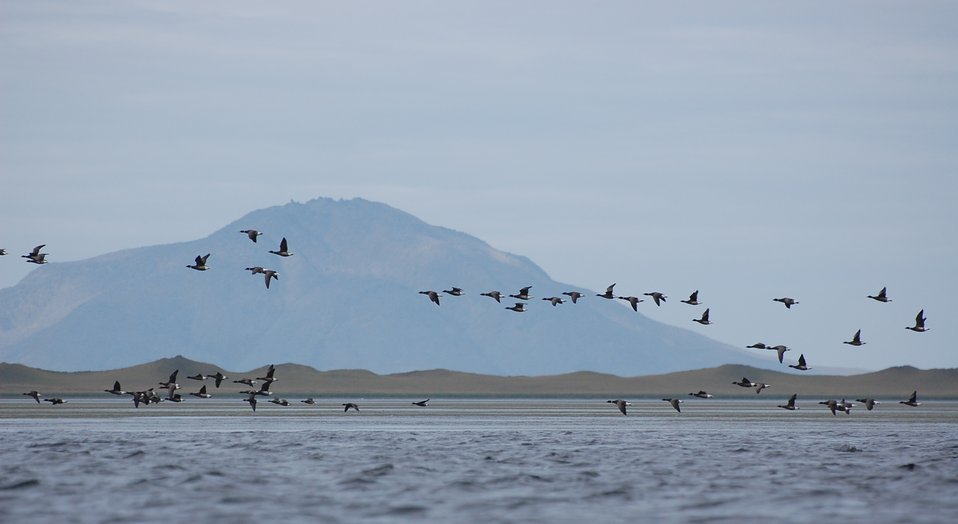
Brant at Izembek Lagoon

Izembek National Wildlife Refuge